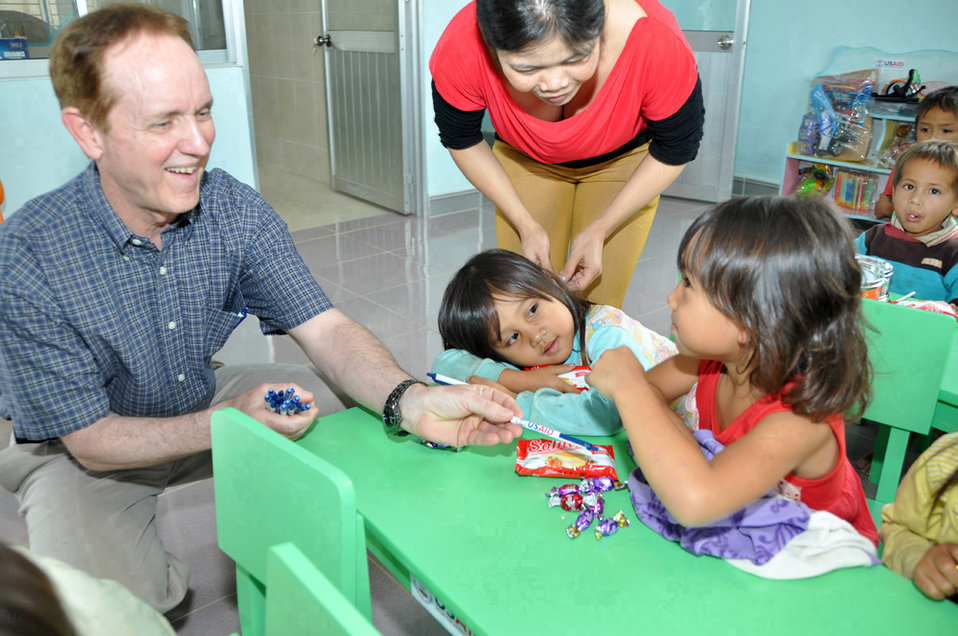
USAID contributes to refurbished pre-schools and teacher training in Vietnam

USAID Mission Director Francis Donovan meets children in Kon Tum.